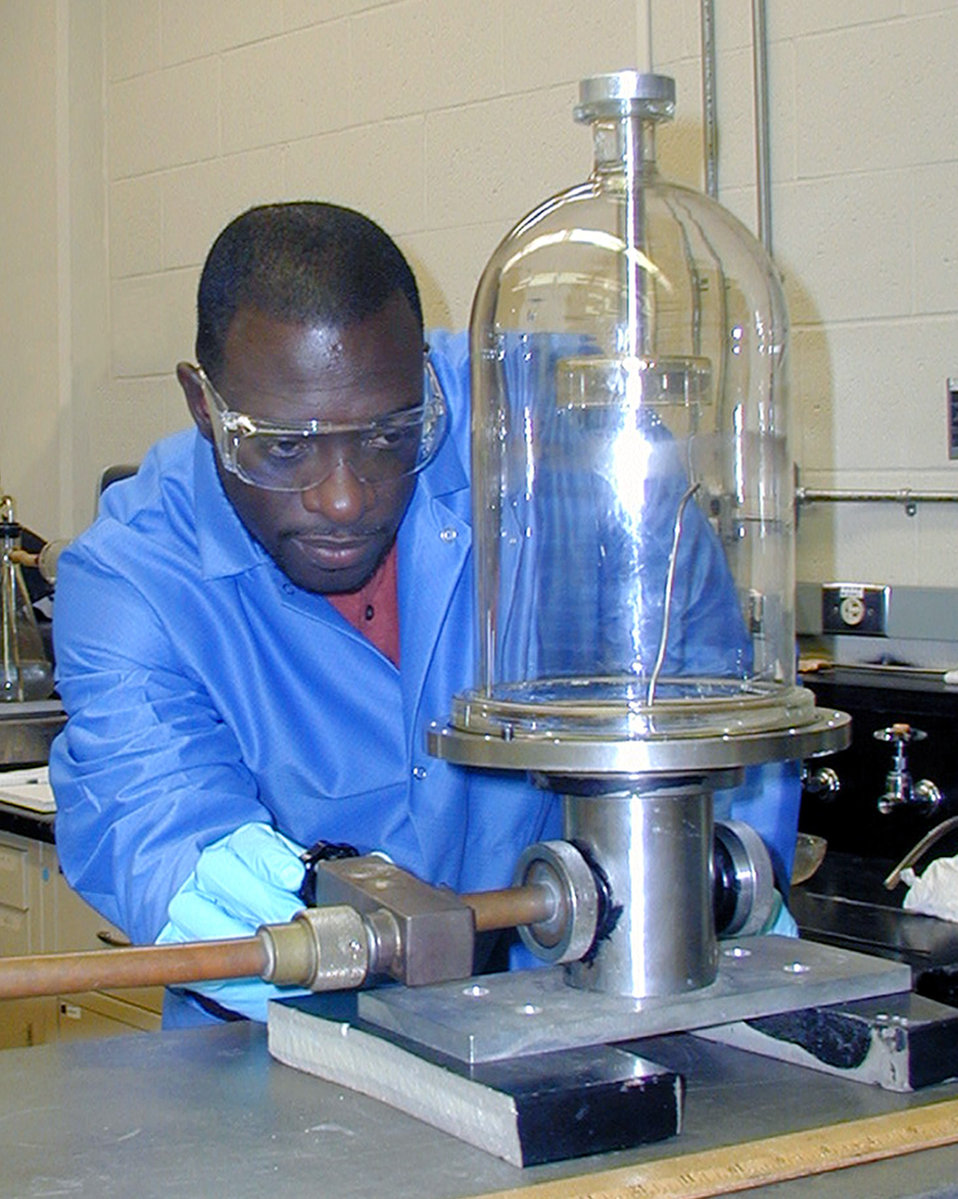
AFRL physicist earns national recognition

WRIGHT-PATTERSON AIR FORCE BASE, Ohio -- Dr. Darnell Diggs was named one of the